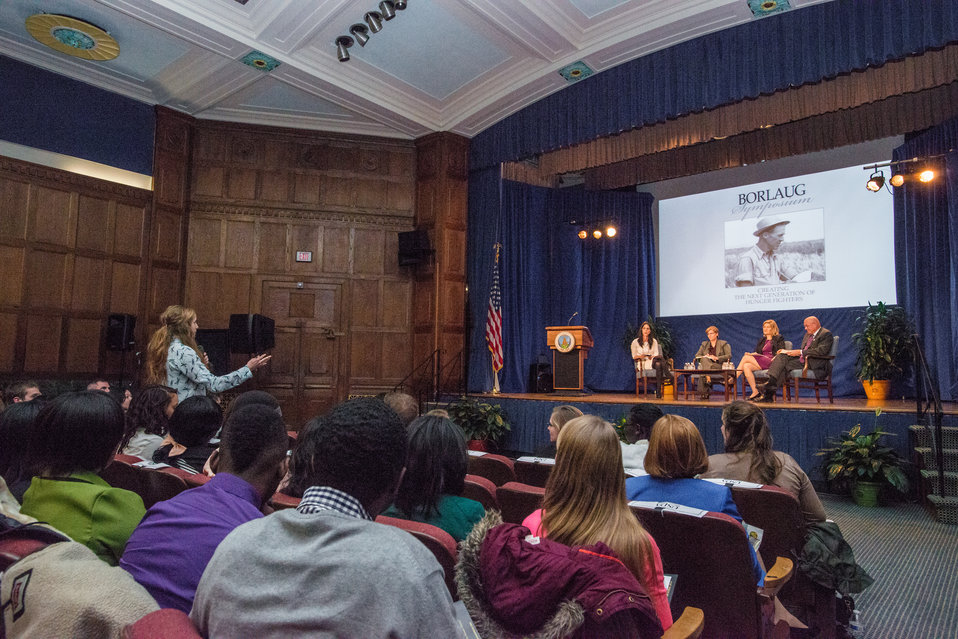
University of Maryland – Eastern Shore, University of Minnesota, The Norman Borlaug Institute for International Agriculture, Texas A and M University, Cornell University, Iowa State University, and the World Food Prize, students and interns listen, learn, and were given priority access to question and answer sessions with discussion panels during the Borlaug Symposium commemorating the late Dr. Norman Borlaug's 100th Birthday and vision, held in the Jefferson Auditorium of the U.S. Department of Agriculture (USDA) in Washington, D.C. on Tuesday, Mar. 25, 2014. The symposium highlights current efforts addressing global hunger. The symposium panels will feature high school and university students, as well as, scientists and policy advisors at Monsanto Chief Technology Officer Robb Farley talks about mobile communication and it's relationship to agriculture, at the Borlaug Symposium commemorating the late Dr. Norman E. Borlaug's 100th Birthday hosted by the U.S. Department of Agriculture (USDA) in the Jefferson Auditorium of USDA in Washington, D.C. on Tuesday, Mar. 25, 2014. The symposium will highlight current efforts addressing global hunger. The symposium panels will feature high school and university students, as well as, scientists and policy advisors at U.S. Agency for International Development (USAID), USDA and Non-Governmental Organizations (NGO). Questions from students and interns are given priority to panelists. Lightening presentations will have leading students and individuals present what they are doing to help achieve Dr. Borlaug’s vision of creating the next generation of hunger fighters. The symposium was planned in partnership with: U.S. Agency for International Development (USAID), Cornell University, Iowa State University, University of Minnesota, The Norman Borlaug Institute for International Agriculture, Texas A and M University, and the World Food Prize.